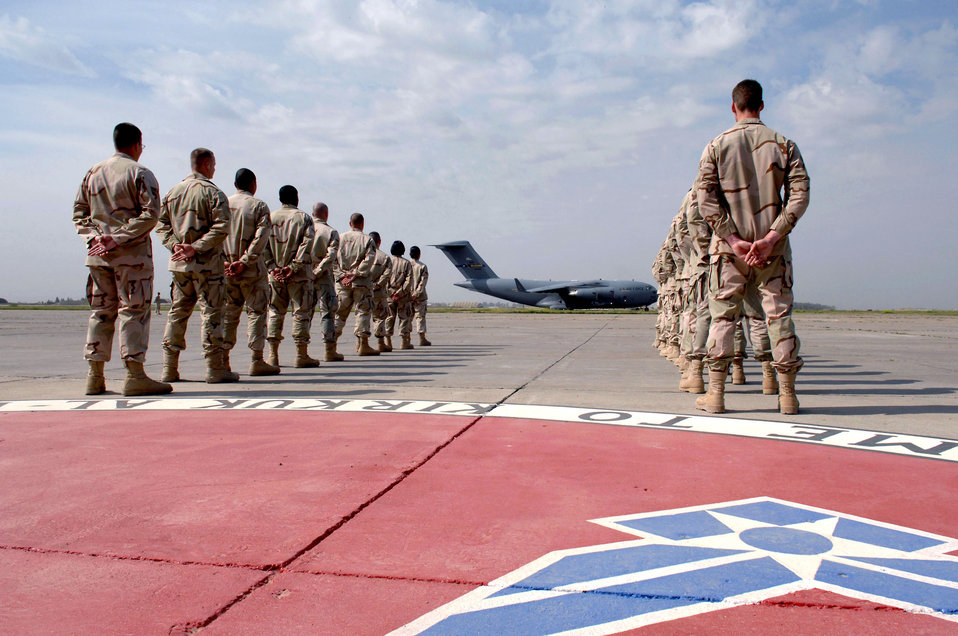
A special visitor arrives

Secretary of the Air Force Michael W. Wynne lands at Kirkuk Air Base, Iraq, on a C-17 Globemaster III March 28 as Airmen of the 506th Air Expeditionary Group await his arrival.